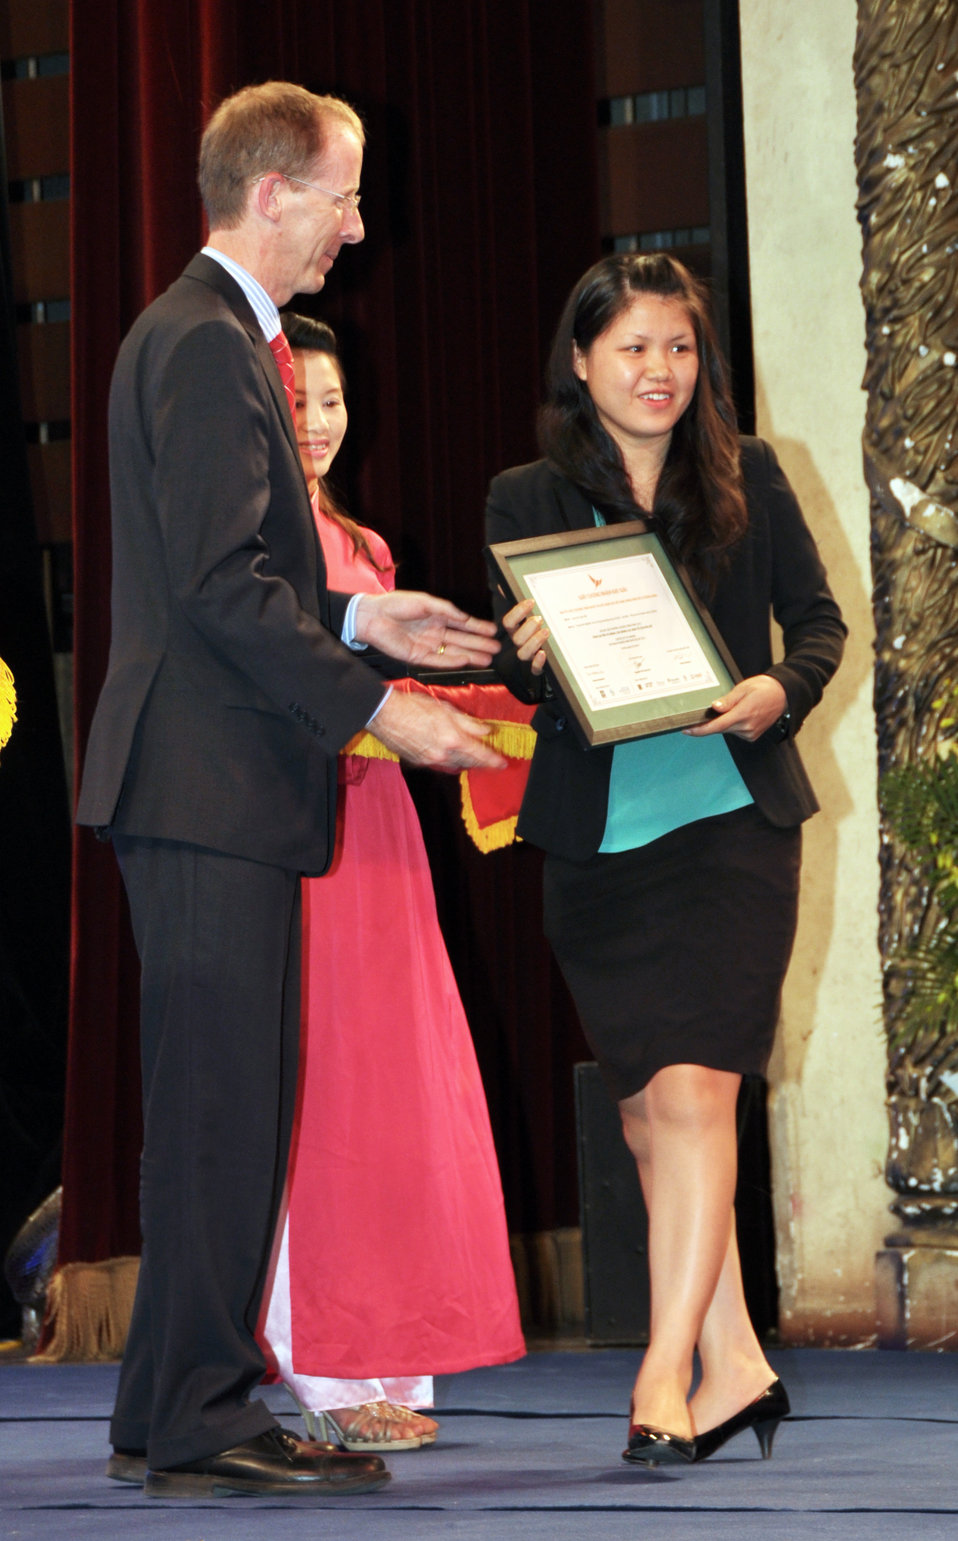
Vietnam Women Innovation Day 2013

USAID Mission Director Joakim Parker awards prizes to winning innovative proposals.

Hanoi, October 2, 2013.